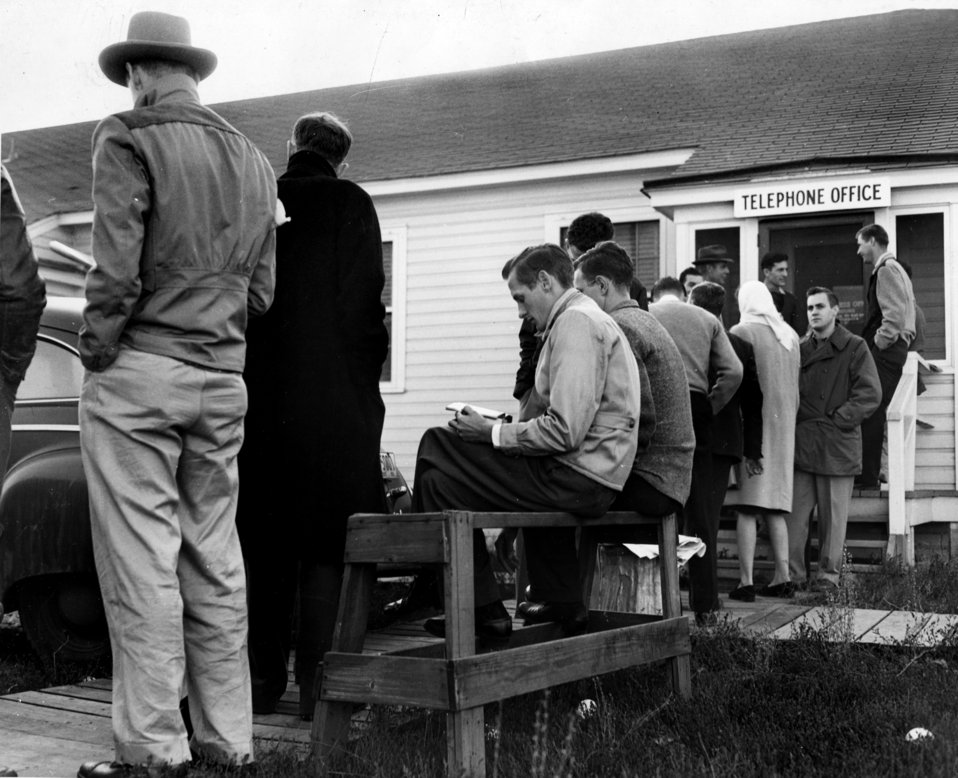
Line for phones from Bell Telephone Co. in Oak Ridge

MED-243 DOE photo Ed Westcott 11-1-1946 After Bell Telephone Co. took over the telephones from the Army on Nov. 1, 1946. Residence of Oak Ridge lined up before office hours to apply for phones.